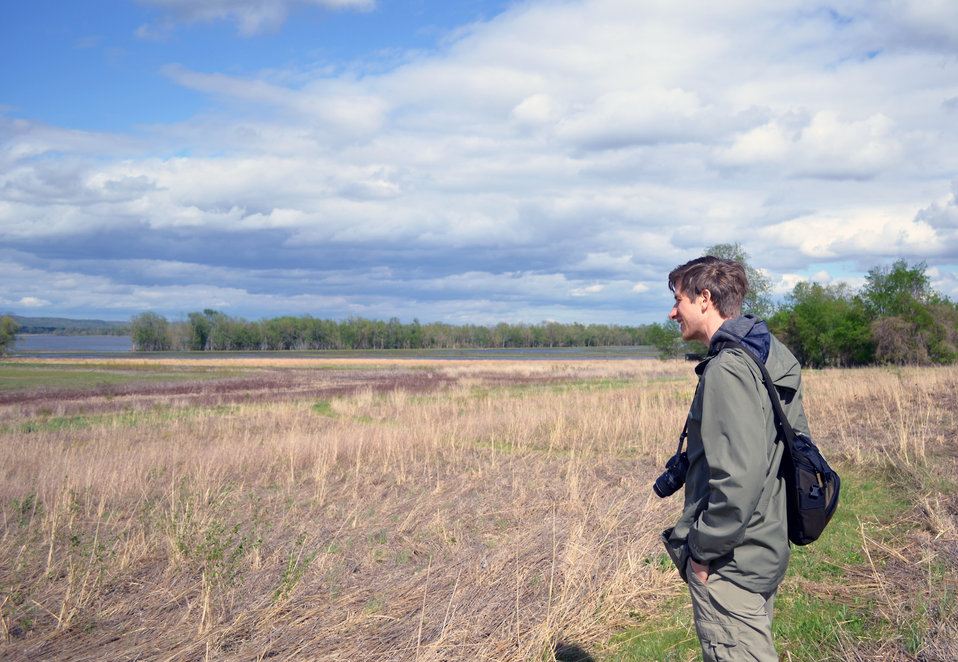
Enjoying Nature at Two Rivers National Wildlife Refuge

Two Rivers National Wildlife Refuge is a great place to sight see and bird watch!